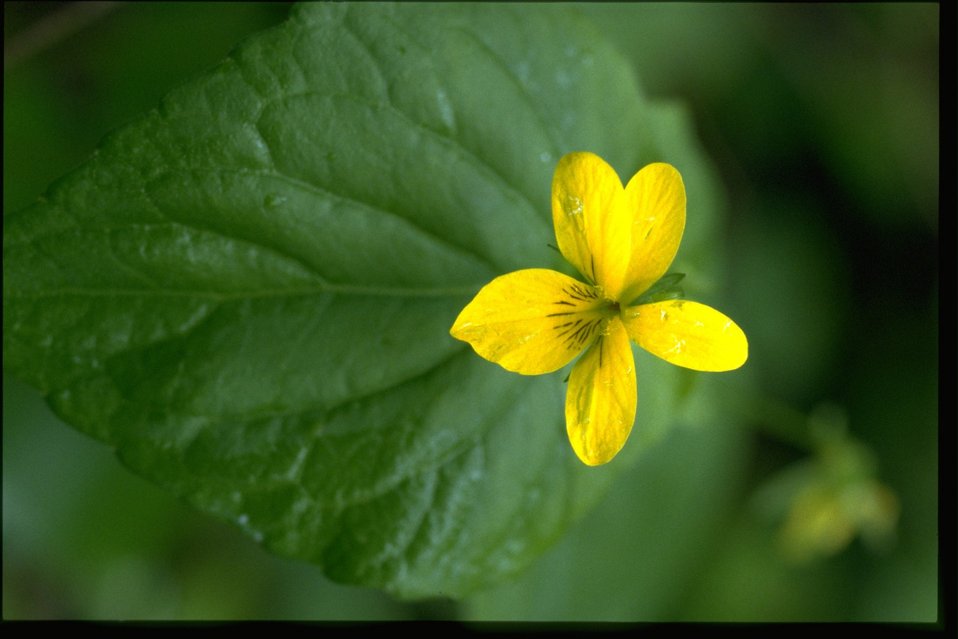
Closeup shot of stream violet (Viola glabella).